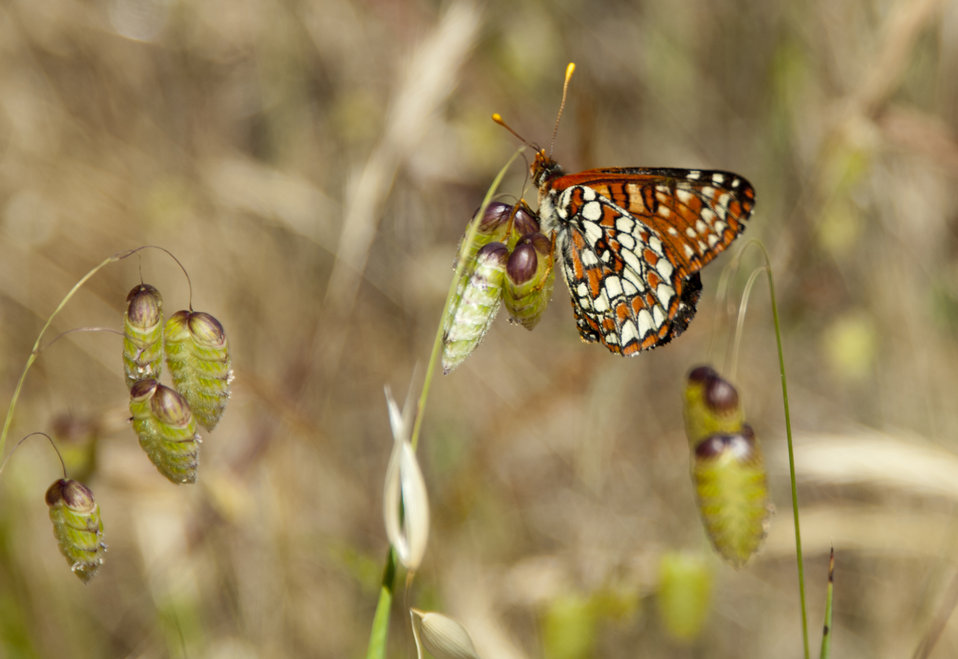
Chalcedon Checkerspot Butterfly 1

Photo Credit - Sarah Swenty/USFWS

Seen recently on San Bruno Mountian, the Variable Checkerspot or Chalcedon Checkerspot is a species of butterfly, common in western North America from Alaska to Baja California and from the Rocky Mountains to the Pacific Ocean.